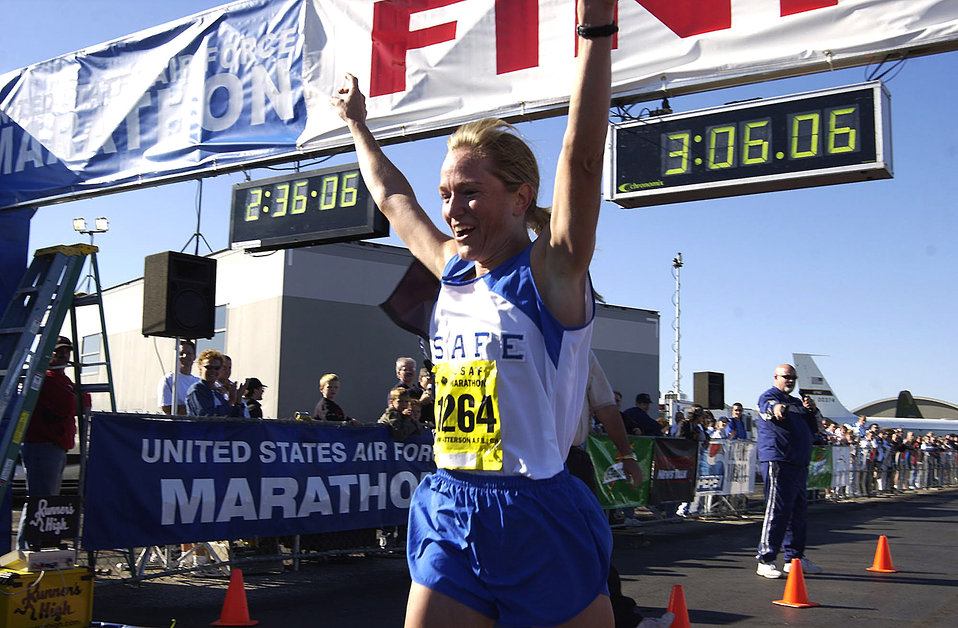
Marathon

Maj. Jill Metzger, the personnel chief at the 376th Air Expeditionary Wing at Manas Air Base, Kyrgyzstan, is still missing after disappearing during a shopping trip at the nearby capital city of Bishkek. Major Metzger, a champion marathon runner, is shown here crossing the line as the first female finisher of the 2004 Air Force Marathon.